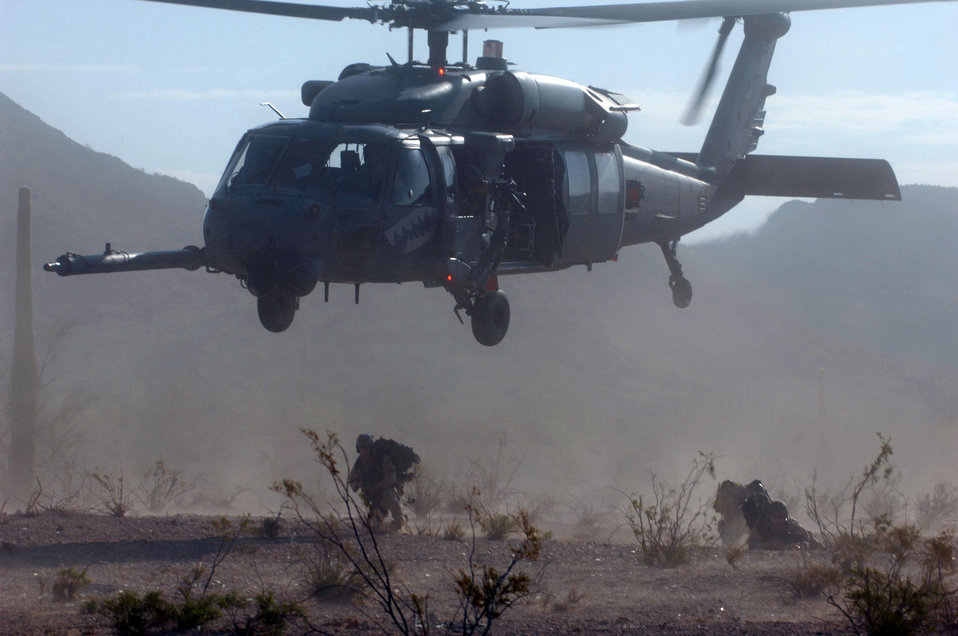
Angels bring thunder

48th Rescue Squadron pararescueman secure the area on the ground after being inserted by a 55th Rescue Squadron HH-60 Pave Hawk during Exercise Angel Thunder July 16 at Gila Bend, Ariz. The exercise is designed to provide realistic combat search and rescue training for Airmen in combat rescue forces. Members of the 48th and 55th Rescue Squadrons are from Davis-Monthan Air Force Base, Ariz.